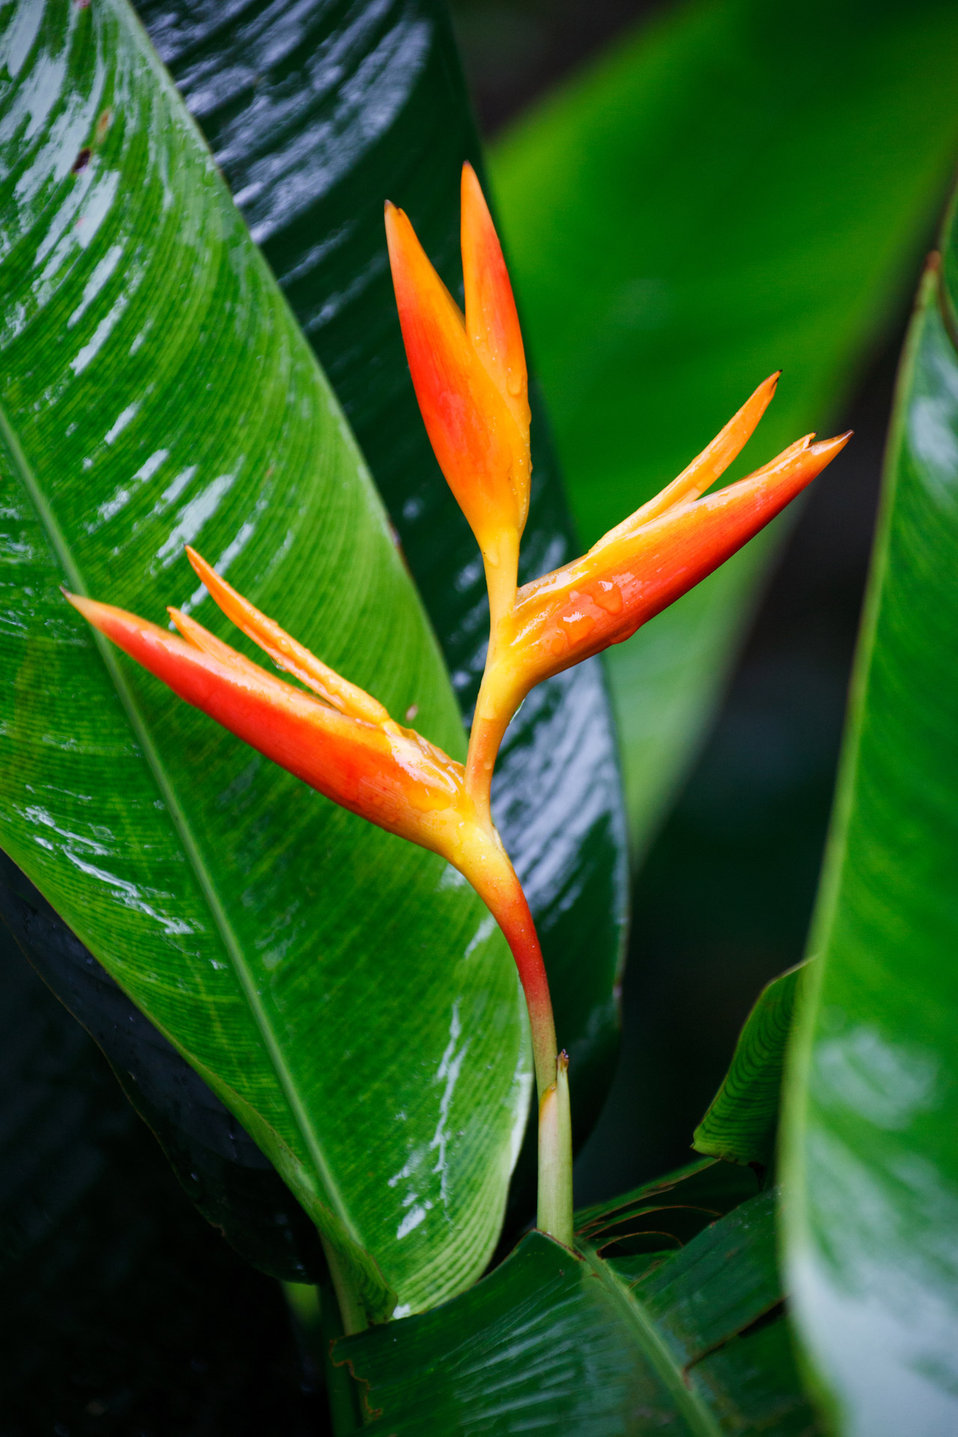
Red heliconia

Wet red heliconia flower with green leaves in the background.